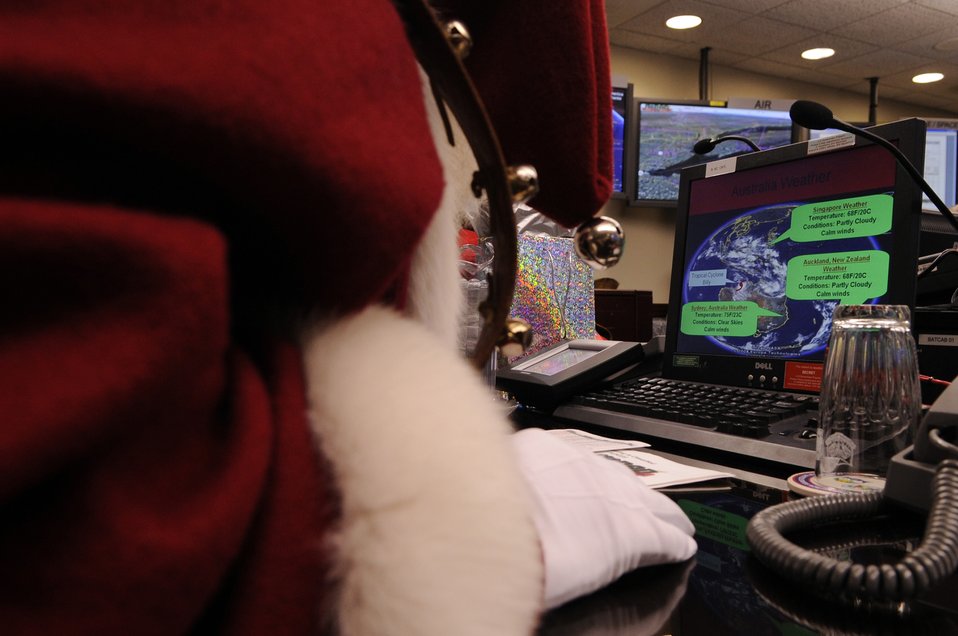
Santa Claus is coming to town

Santa Claus makes a surprise visit to the North American Aerospace Defense Command Tracks Santa Battle Cab Dec. 23 at Peterson Air Force Base, Colo. Santa received Federal Aviation Administration, weather and air mission briefs.